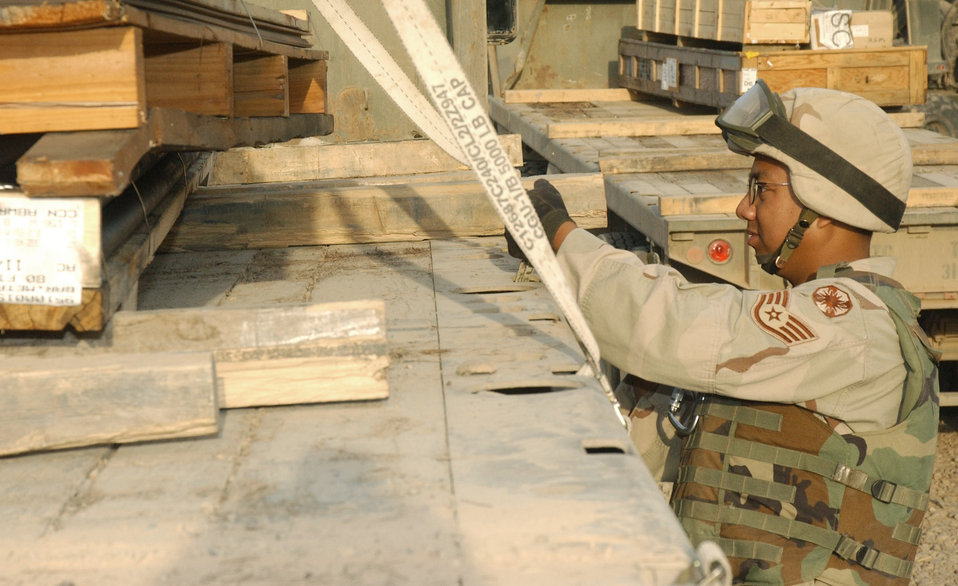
Airmen help Soldiers keep OIF supplies rolling

BALAD AIR BASE, Iraq -- Staff Sgt. Radley Jacinto straps down cargo on a tractor-trailer at the cargo yard here. Sergeant Jacinto is a vehicle operator assigned to the Arrival/Departure Air Cargo Group. The group recently set a one-day record by moving more than 1.3 million pounds of cargo. The Airmen are part of Detachment 2632 of the 732nd Expeditionary Logistics Readiness Squadron.